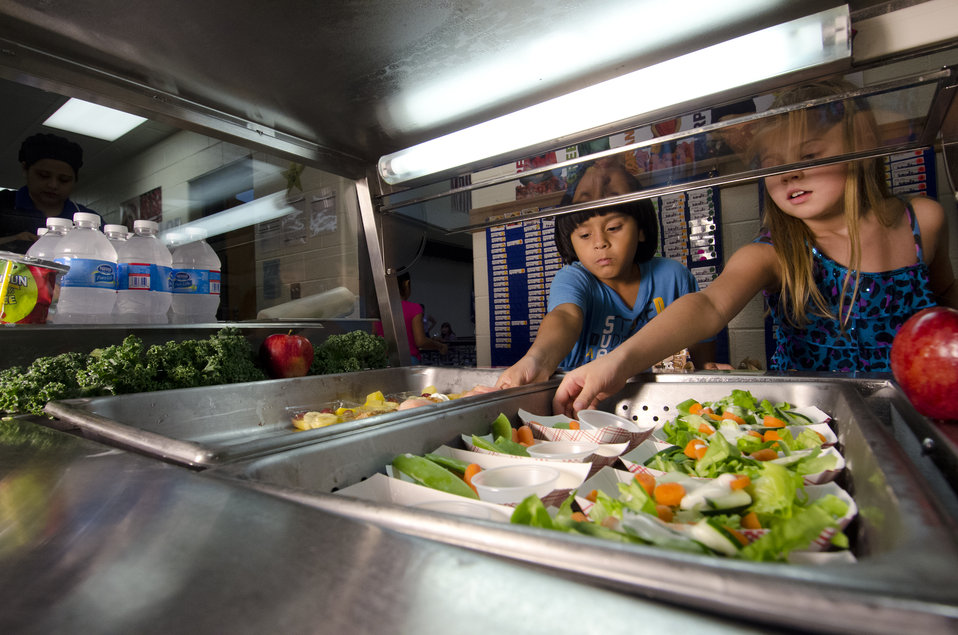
School lunch staff and students enjoy the new school lunch menu created to meet the new standards at the Yorkshire Elementary School in Manassas, VA on Friday, Sept. 7, 2012.